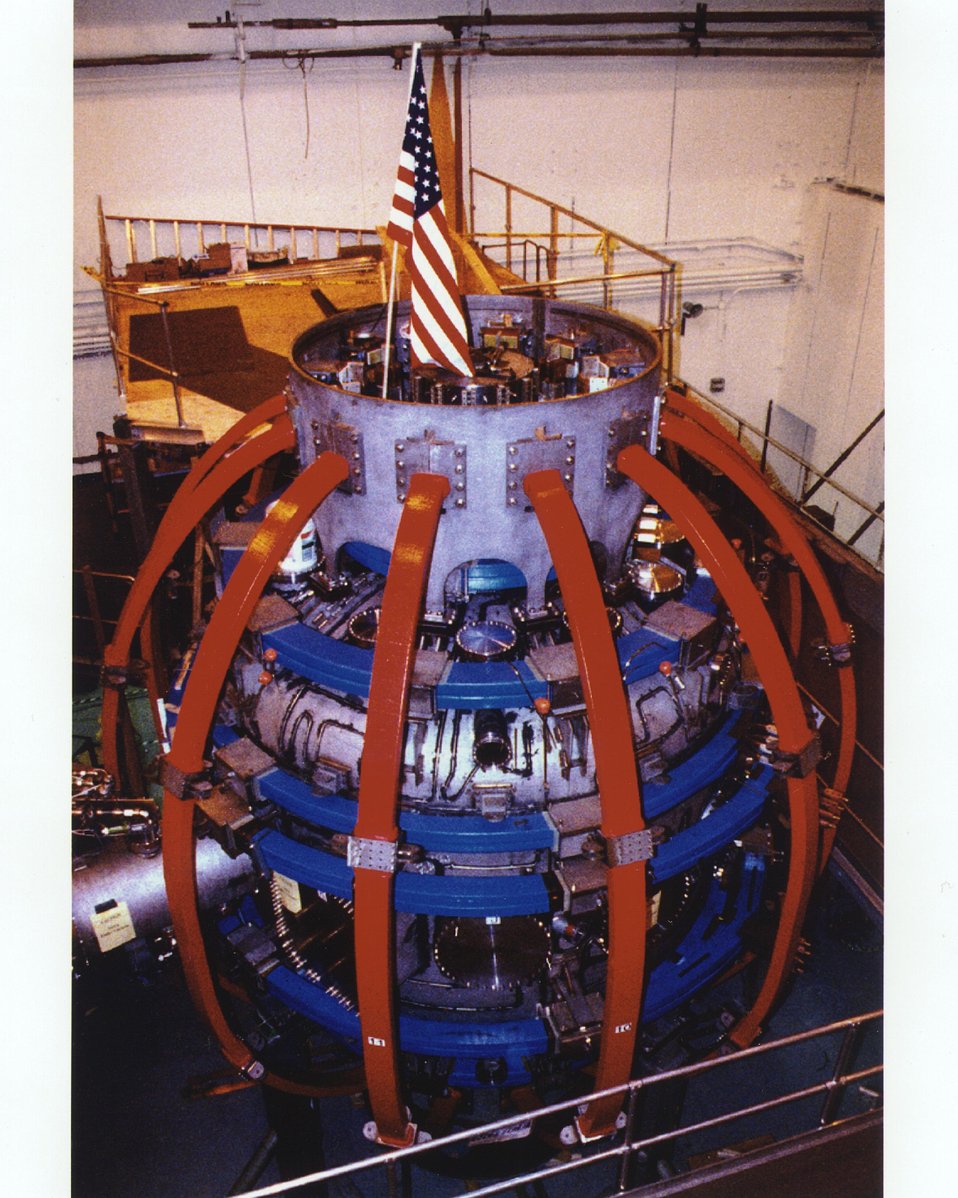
PPPL'S NATIONAL SPHERICAL TORUS EXPERIMENT (NSTX).

NSTX, A MAGNETIC FUSION DEVICE CONSTRUCTED BY PPPL IN COLLABORATION WITH OAK RIDGE NATIONAL LAB, COLUMBIA UNIV. AND THE UNIVERSITY OF WA , OBTAINED FIRST PLASMA FEB. 12, 1999. NSTX WILL BE USED TO STUDY PHYSICS PRINCIPLES OF SPHERICALLY SHAPED PLASMAS-HOT IONIZED GASES IN WHICH NUCLEAR FUSION WILL OCCUR UNDER THE RIGHT CONDITIONS OF TEMPERATURE, DENSITY AND CONFINEMENT IN A MAGNETIC FIELD. SCIENTISTS FEEL THAT FUSION, THE ENERGY SOURCE OF THE SUN AND ALL STARS, CAN PROVIDE AN INEXHAUSTIBEL, SAFE, AND ENVIRONMENTALLY SOUND SOURCE OF ENERGY.